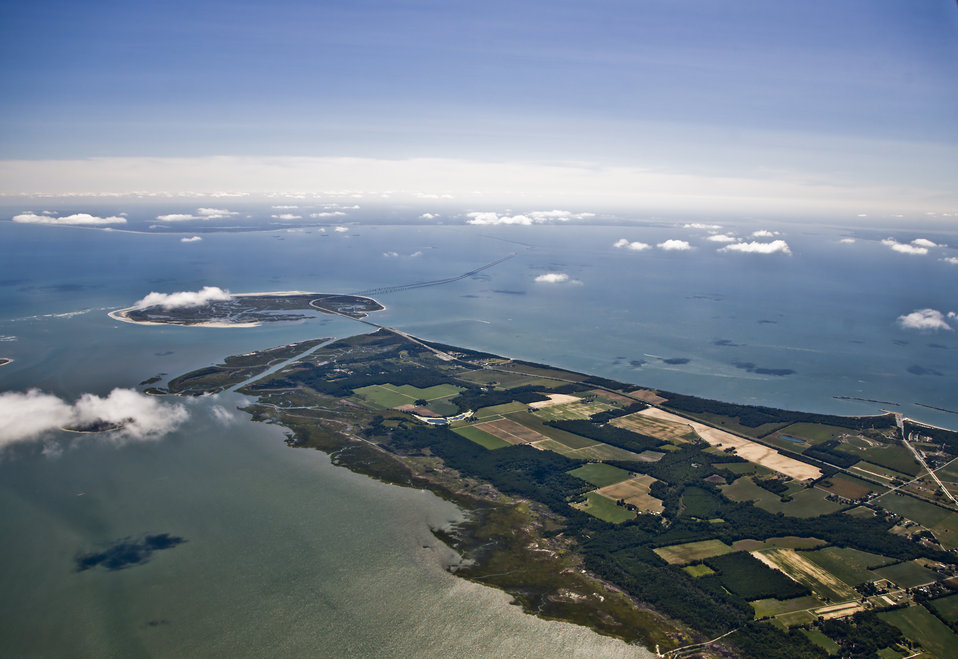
Aerial view of the refuge

Eastern Shore of Virginia National Wildlife Refuge, VA.